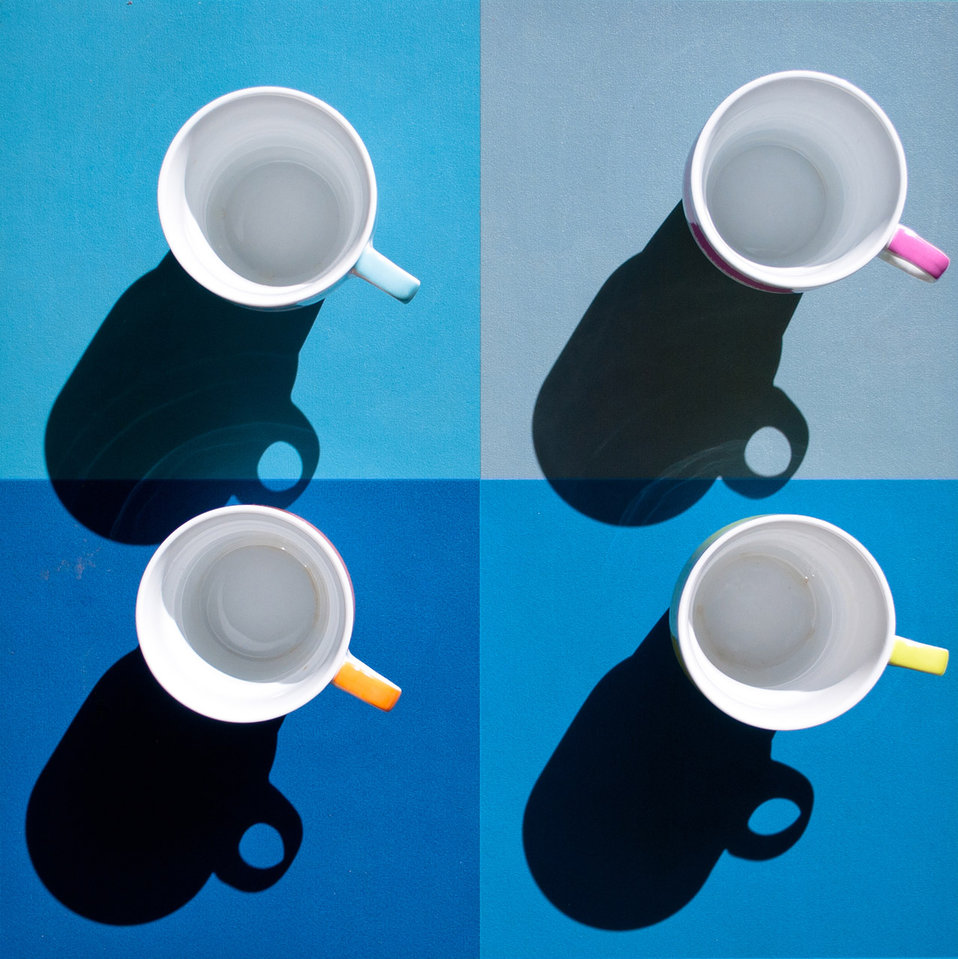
Coffee cups

Four coffee cups, blue, orange, green and pink on a checked background.